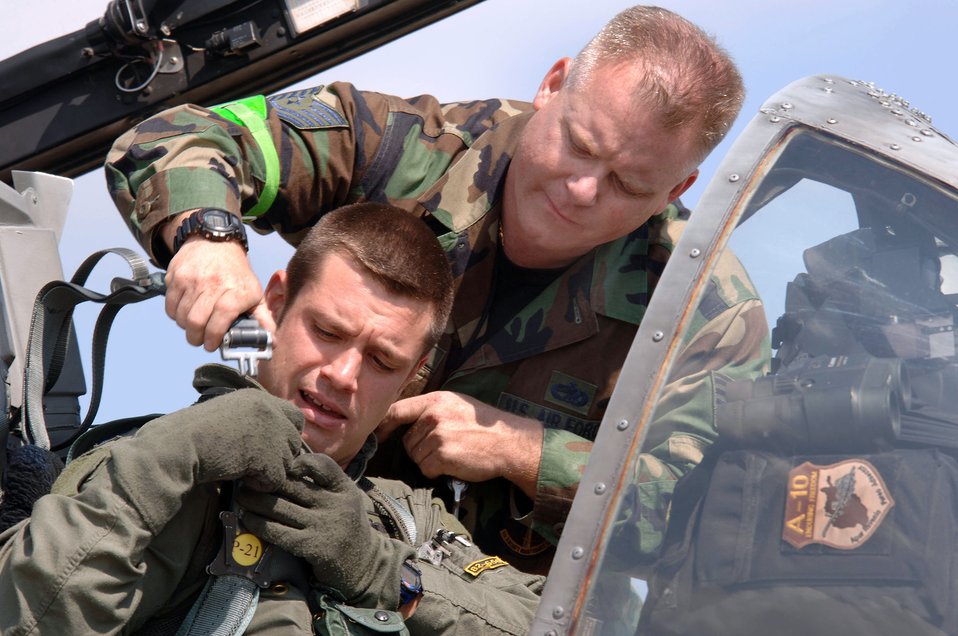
Training keeping Spangdahlem 'Warthogs' ready to deploy

SPANGDAHLEM AIR BASE, Germany -- Tech. Sgt. Ken Sanders straps Capt. Chad Balettie into his A-10 Thunderbolt II before a training sortie. Training and more training fills the days for 81st Fighter Squadron Airmen here. Sergeant Sanders is an 81st Aircraft Maintenance Unit crew chief.